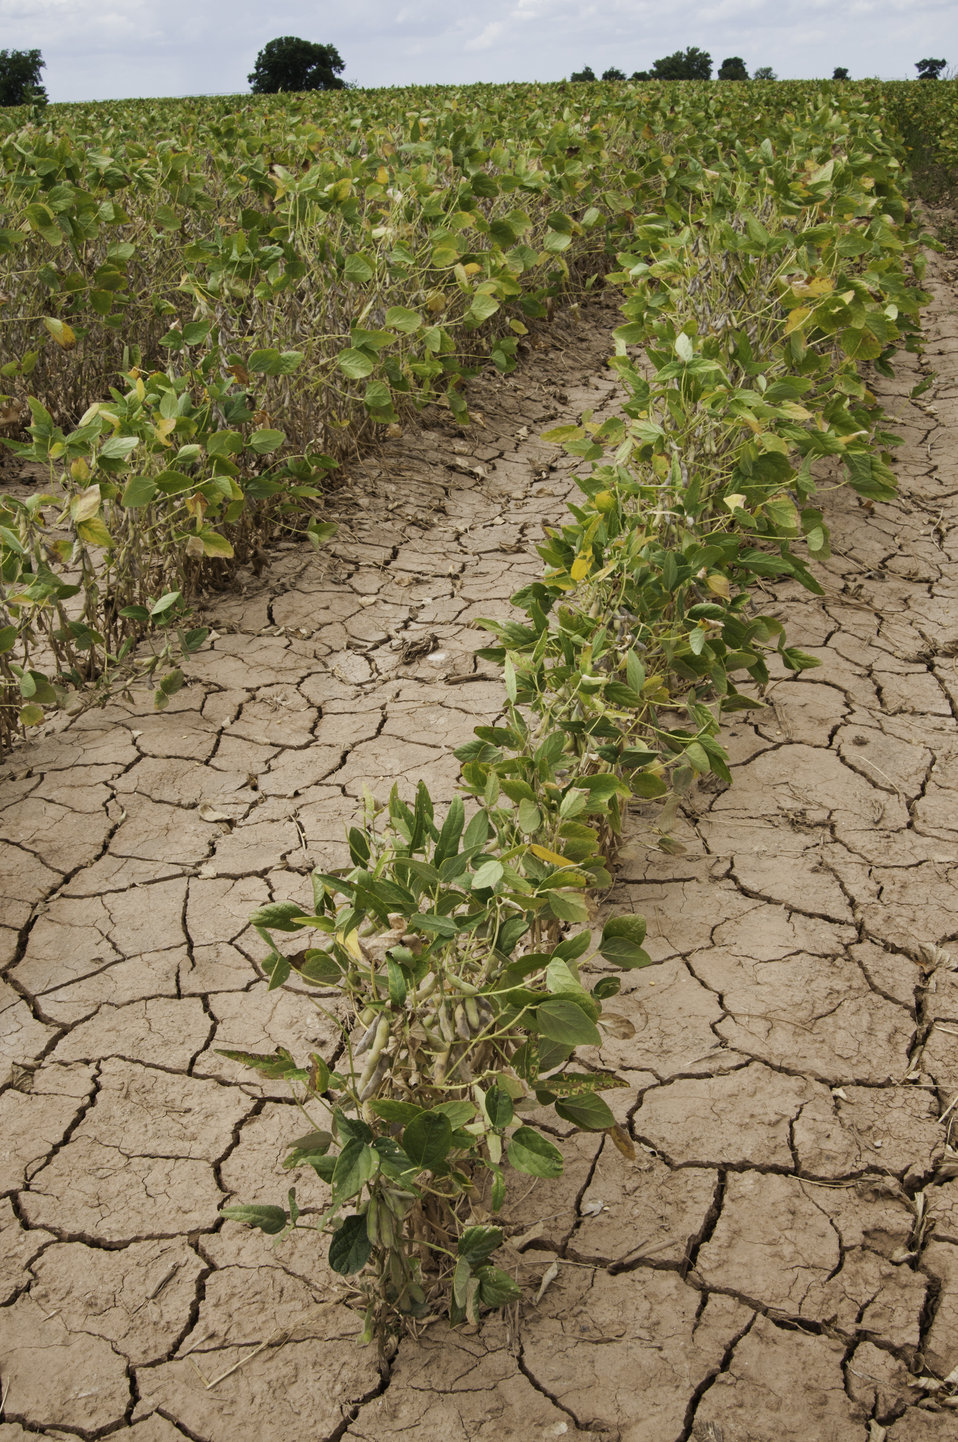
Soybeans show the effect of the drought near Navasota, TX on Aug. 23, 2013.